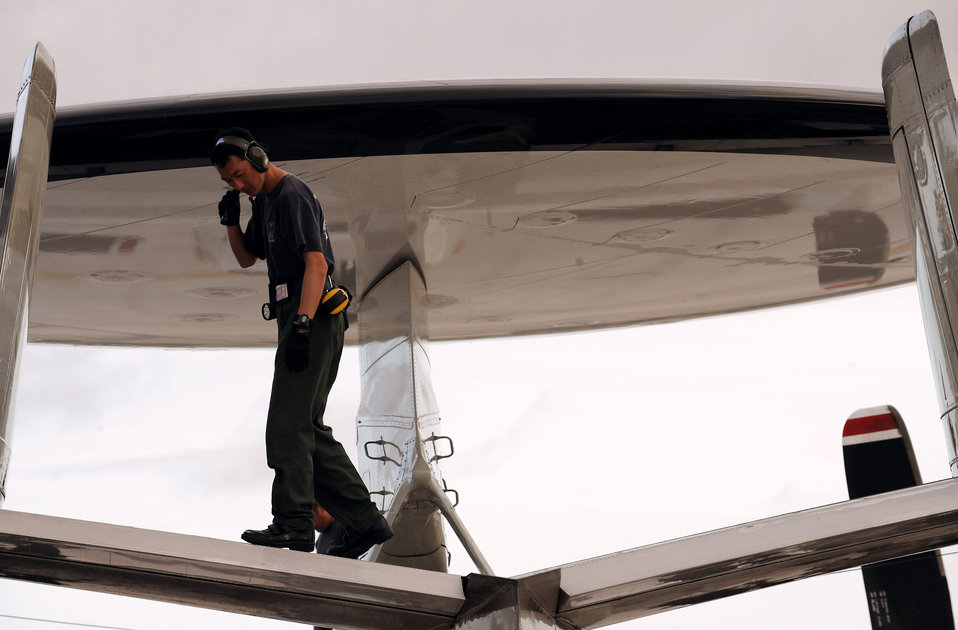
Cope North 09-1

Sgt. Masatsugo Yamaguchi, a Japan Air Self Defense Force aircraft maintainer, inspects an E-2C Hawkeye Feb. 5 at Andersen Air Force Base, Guam, during Cope North 09-1 after a local-area mission. Units from the U.S. Air Force, U.S. Navy and the JASDF are participating in exercise Cope North 09-1 at Andersen from Feb 2 through 13. The exercise is the first iteration of a regularly scheduled joint and bilateral exercise and is part of the on-going series of exercises designed to enhance air operations in defense of Japan.